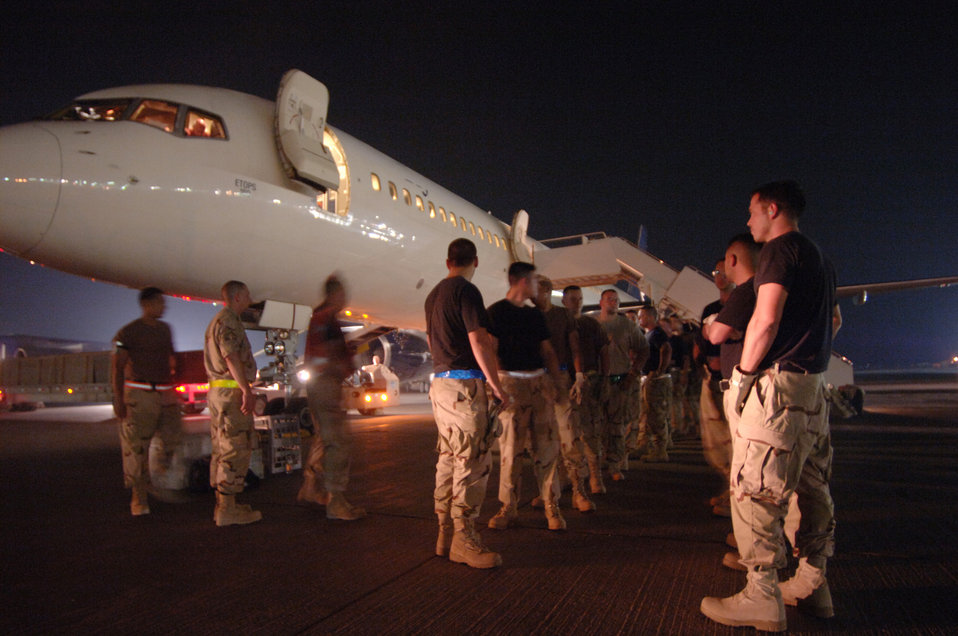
Work begins when boots hit the ground

Minutes after landing on the ground in Southwest Asia, a volunteer detail of 30 passengers receives instructions Sept. 17 on how to assist local ground crews in removing luggage from the cargo hull of the commercial DC-10 they just flew in on.